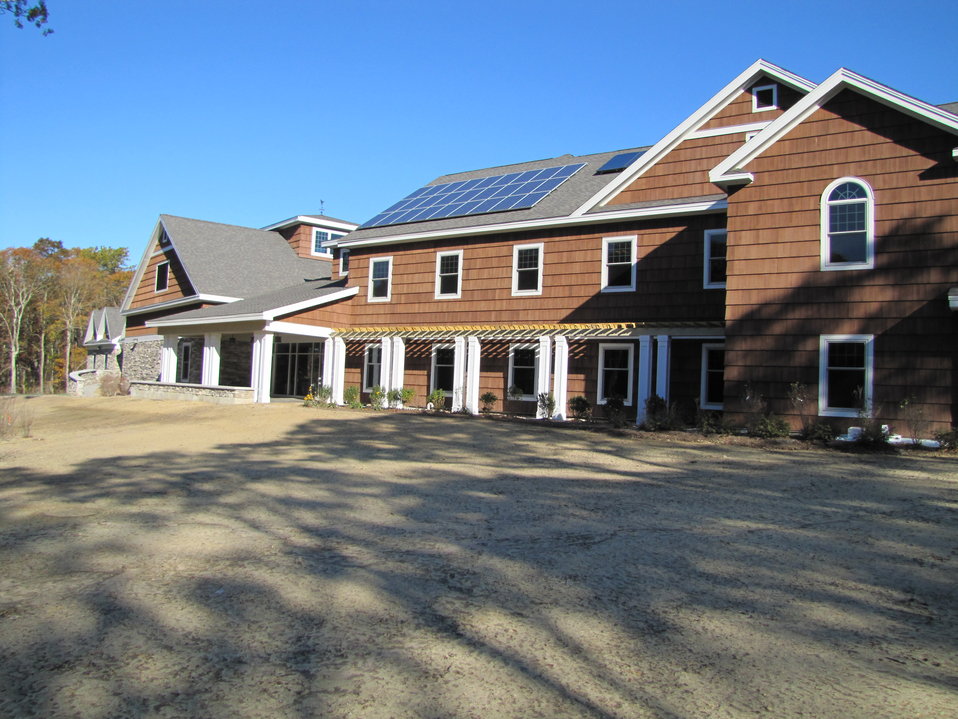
Back of Visitor Center with solar panels

Back view of recently completed Long Island National Wildlife Refuge Complex & Headquarters building.